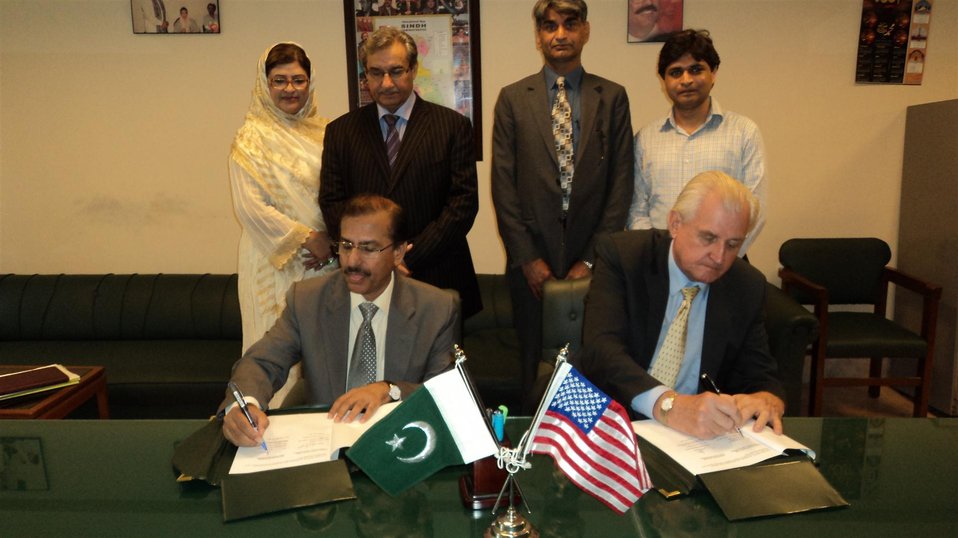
MoU between GoS and USAID

Karachi, September 4, 2012 - Deputy Mission Director, U.S. Agency for International Development (USAID), Edward Birgells, and Secretary of Education, Mukhtar Hussain Soomro, signed a Memorandum of Understanding (MOU) to repair and rehabilitate flood damaged schools in the four southern Sindh districts: Mirpurkhas, Sanghar, Umerkot and Tando Allahyar. The USAID’s $ 4 million commitment will assist in rehabilitation of selected public schools damaged in the 2011 floods in the four target districts.